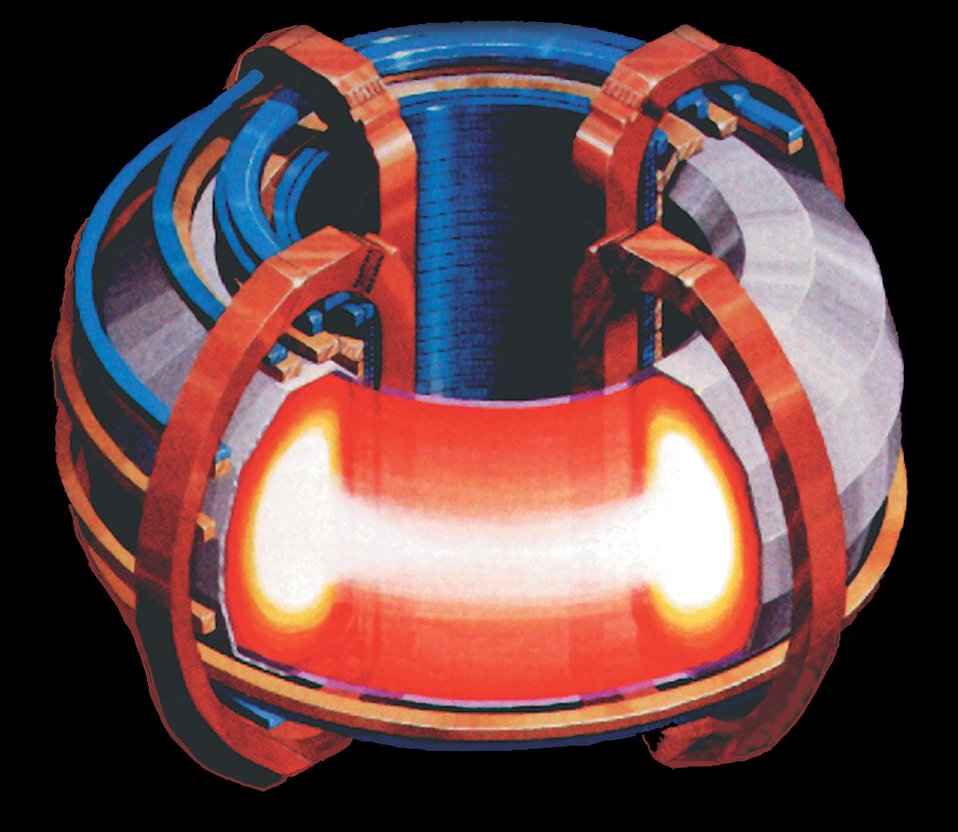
MAGNETIC FUSION ENERGY CONCEPT.

FUSION IS THE POWER SOURCE OF THE SUN AND STARS. IT OCCURS WHEN FORMS OF THE LIGHTEST ATOM, HYDROGEN, COMBINE TO MAKE HELIUM IN A VERY HOT (100 MILLION DEGREE CENTIGRADE) IONIZED GAS, OR PLASMA. MAGNETIC FUSION ENERGY IS PRODUCED WHEN THE PLASMA IS CONFINED BY A MAGNETIC FIELD AND HELD AT THE REQUIRED DENSITY AND TEMPERATURE. INERTIAL FUSION ENERGY IS ANOTHER APPROACH TO FUSION ENERGY. DOE'S FUSION ENERGY SCIENCES PROGRAM LEADS THE NATION'S EFFORT IN THE STUDY OF PLASMA, THE FOURTH STATE OF MATTER, WHICH CONSTITUTES MOST OF THE VISIBLE UNIVERSE, AND IS AT THE CORE OF A FUSION POWER SYSTEM.